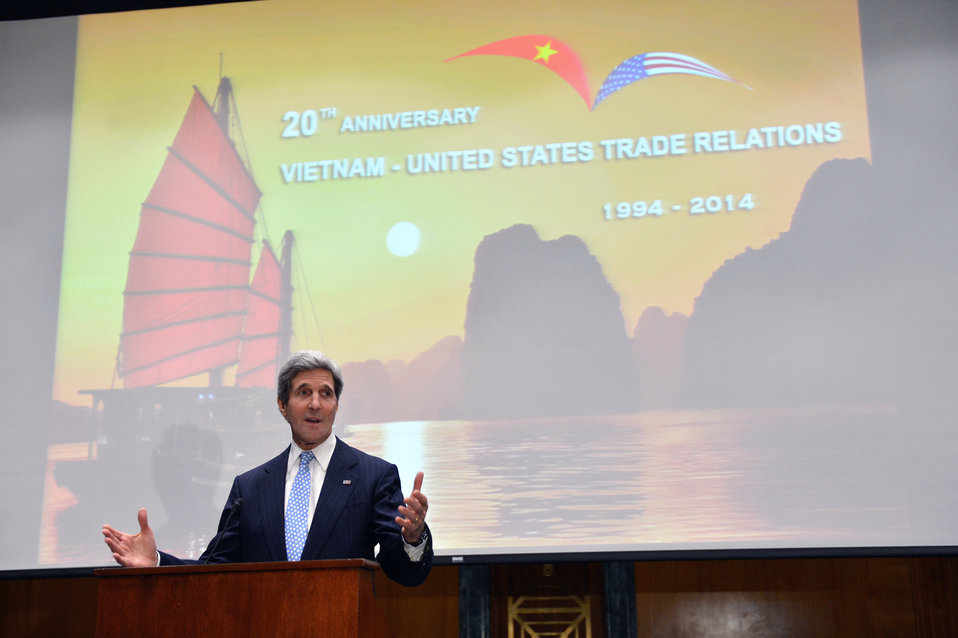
Secretary Kerry Attends a Reception in Honor of the 20th Anniversary of U.S.–Vietnam Trade Relations

U.S. Secretary of State John Kerry attends a reception in honor of the 20th Anniversary of U.S.–Vietnam Trade Relations in Washington, D.C., on February 10, 2014.